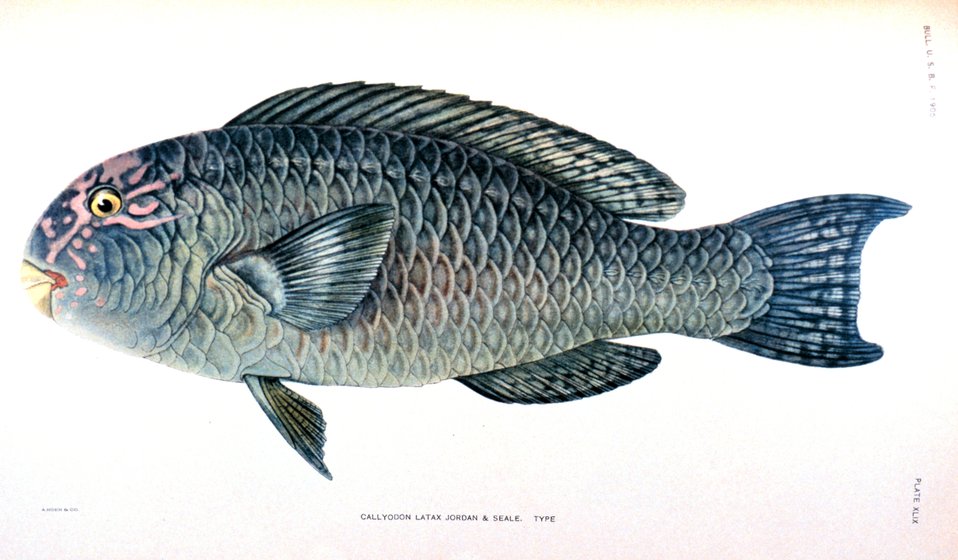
Callyodon latax Jordan & Seale. Type. In: 'The Fishes of Samoa', by David Starr Jordan and Alvin Seale. Bulletin of the United States Fish Commission, Vol. 25, 1905. P. 455, Plate XLIX.